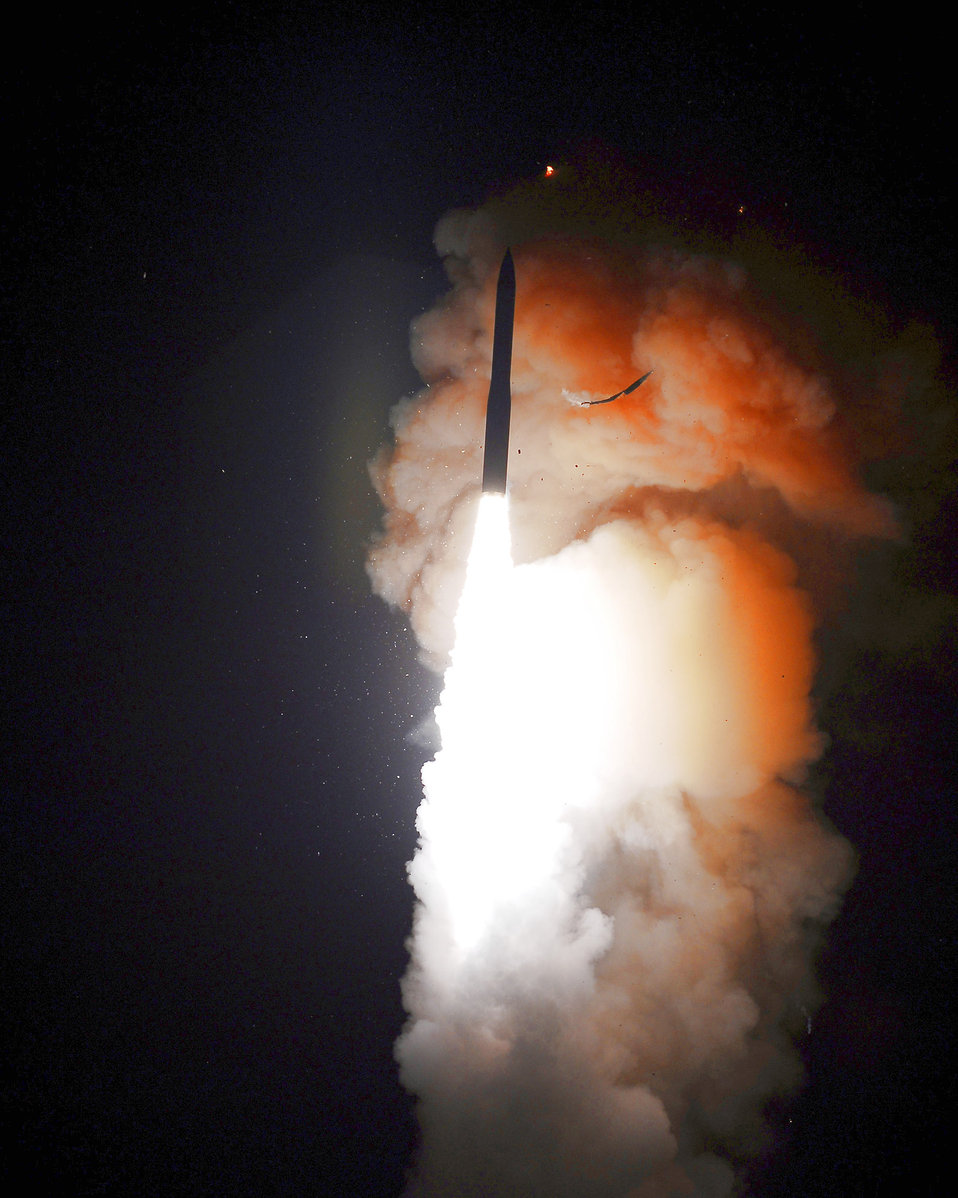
Vandenberg officials launch Minuteman III missile

A Minuteman III intercontinental ballistic missile successfully launches at 1 a.m. Nov. 5 from Vandenberg Air Force Base, Calif. The missile was configured with a National Nuclear Security Administration test assembly in which a single unarmed re-entry vehicle traveled approximately 4,190 miles to their pre-determined targets near the Kwajalein Atoll in the Marshall Islands.